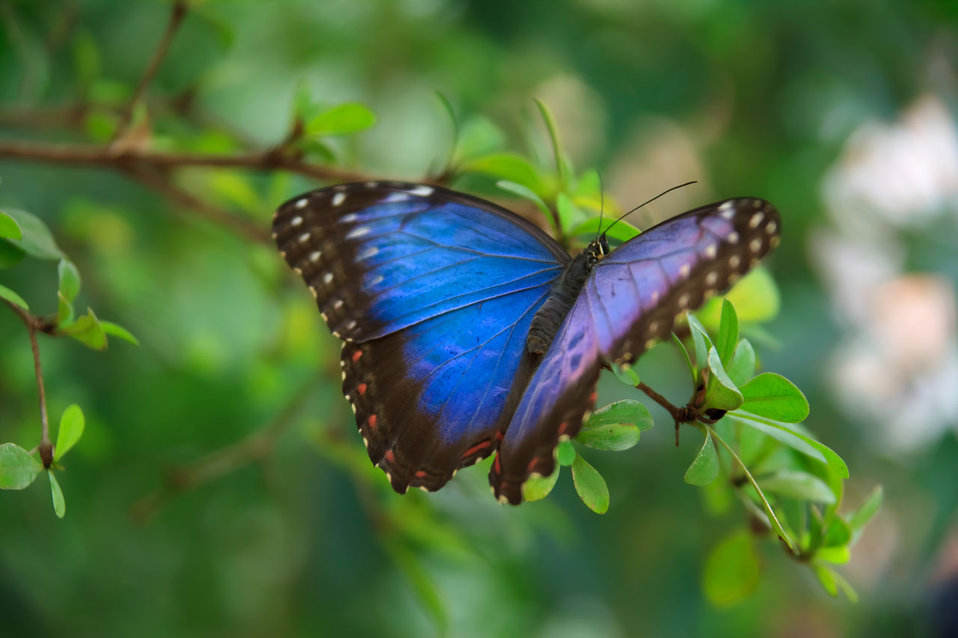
Blue morpho butterfly - morpho peleides sitting on green leaf.